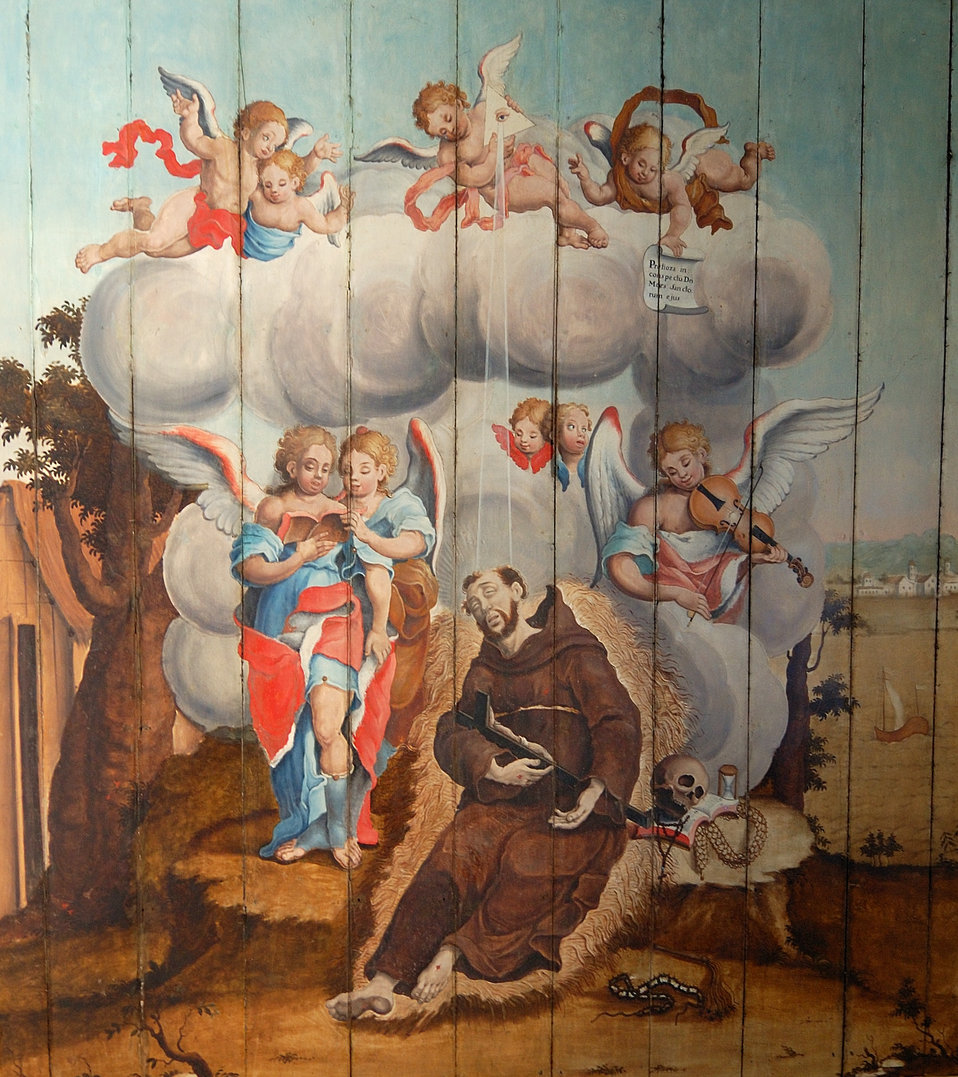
' Manuel da Costa Ata√≠de - Agonia e Morte de S√£o Francisco '